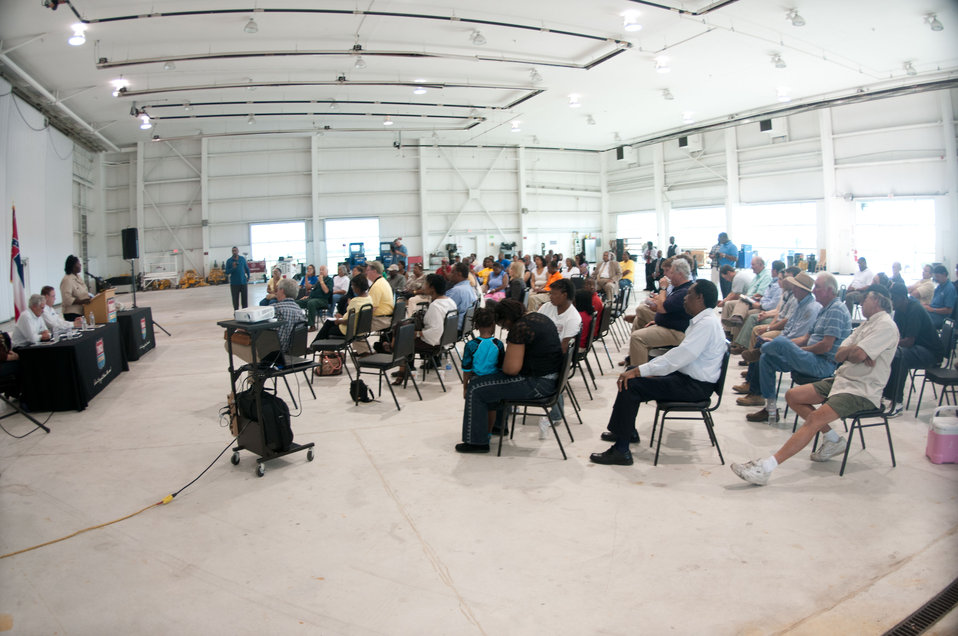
U.S. Department of Agriculture Mississippi Rural Development State Director Trina N. George addresses the gathered farmers during an outreach event at Tunica Airport in Mississippi on Thursday, May 19, 2011. Hosting the event was Congressman Bennie Thompson (left); also there to support the farmers were Under Secretary for Rural Development Dallas Tonsager (second from right); Acting Under Secretary Farm and Foreign Agriculture Service Michael Scuse (right); and other government officials that were available to answer questions and assist people in getting help is available to them.